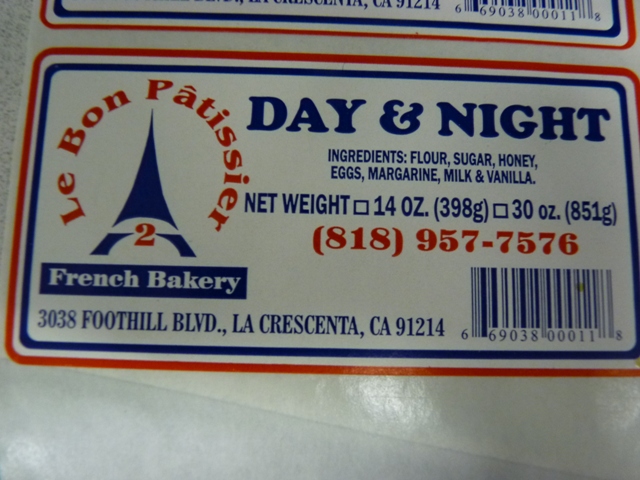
RECALLED - Pastry Products

April 5, 2011 – Product Recall – Le Bon Patissiere-2, Inc. Announces Voluntary Recall On Select Le Bon Patissiere Products That Contain Undeclared Allergens.